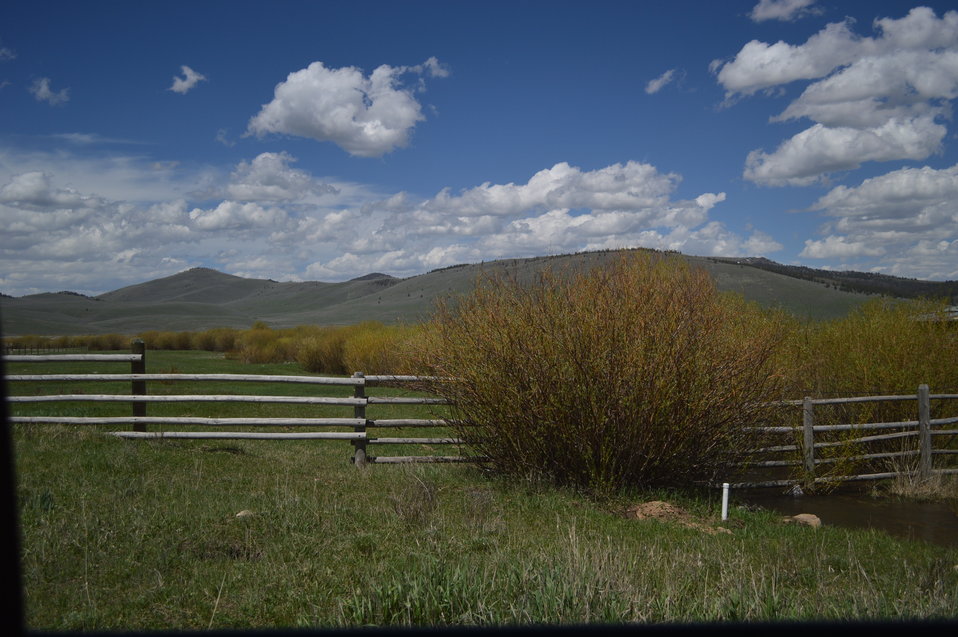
Regional Leadership Visit to Montana 2014